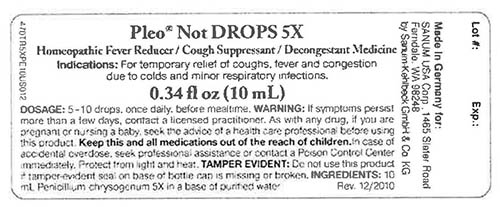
RECALLED – Homeopathic Drug Products

March 18, 2014 – Product Recall – Terra-Medica Issues Voluntary Nationwide Recall of Specified Lots of Pleo Homeopathic Drug Products Due to the Potential for Undeclared Penicillin.